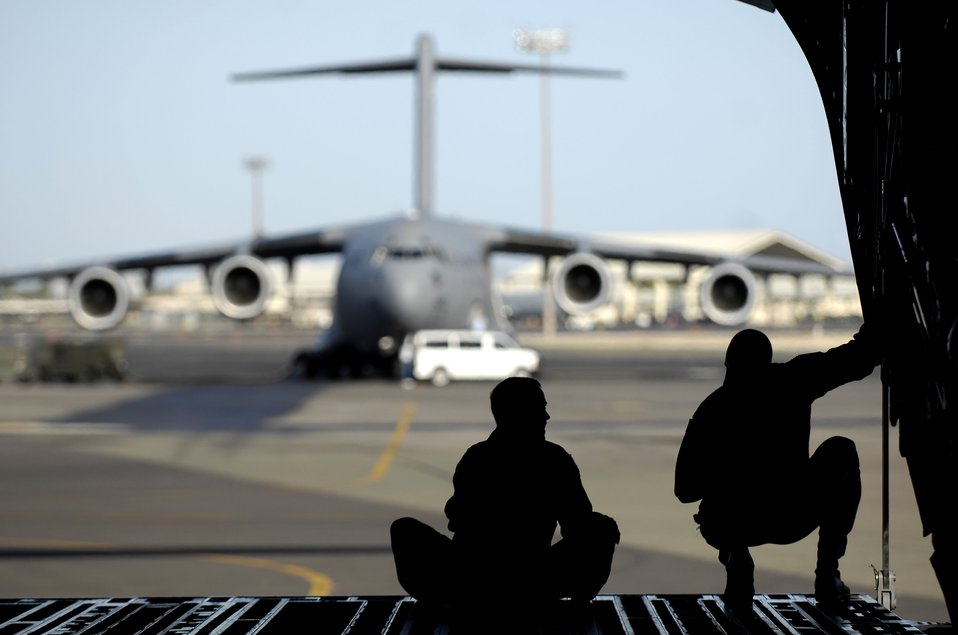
Hickam crew prepares for AMC Rodeo

Maj. Jason Mills and Tech. Sgt. Ansen Lucas discuss techniques for backing their C-17 Globemaster III prior to departing June 22 on a refueling training mission from Hickam Air Force Base, Hawaii. A KC-135 Stratotanker from the 909th Air Refueling Squadron, Kadena Air Base Japan is at Hickam AFB practicing with the C-17 crew from the 535th Airlift Squadron for the 2007 Air Mobility Command Rodeo. Sergeant Lucas is a loadmaster and Major Mills is a pilot with the 535th AS.